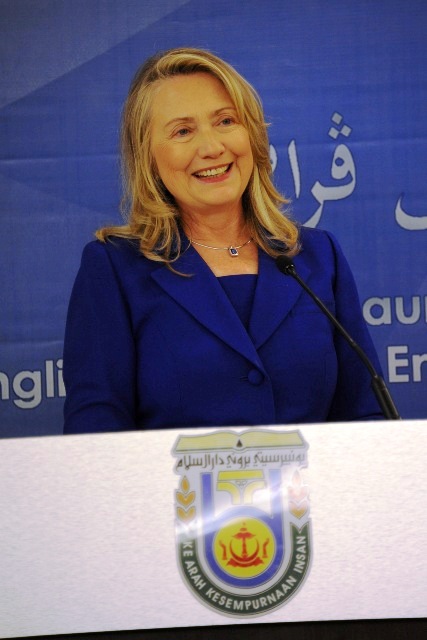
Secretary Clinton Delivers Remarks at the Launch of the Brunei-U.S. English Language Enrichment Project

U.S. Secretary of State Hillary Rodham Clinton delivers remarks at the inaugural launch of the Brunei-U.S. English Language Enrichment Project for ASEAN in Bandar Seri Begawan, Brunei. September 7, 2012.